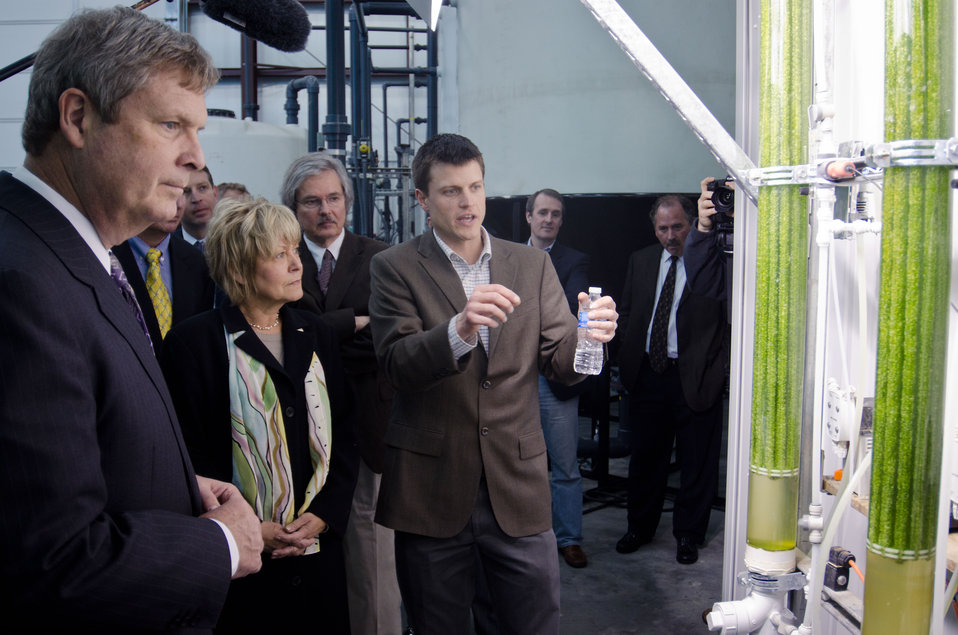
BioProcess Algae Senior Scientist Toby Ahrens (right) showed the bioreactors from the BioProcess Algae pilot project to Agriculture Secretary Tom Vilsack (left) and his wife Christie Vilsack (second from left), during their tour of the facility on Friday, April 15, 2011. The successful completion of the pilot project enabled the company to scale up to commercial-sized reactors. This operation is co-located within GPRE’s ethanol factory where BioProcess Algae technology is used to treat waste products, carbon dioxide, recycled heat and water to mass-produce algae. Algae from this facility are used for animal feeds, pharmaceutical and beauty products.